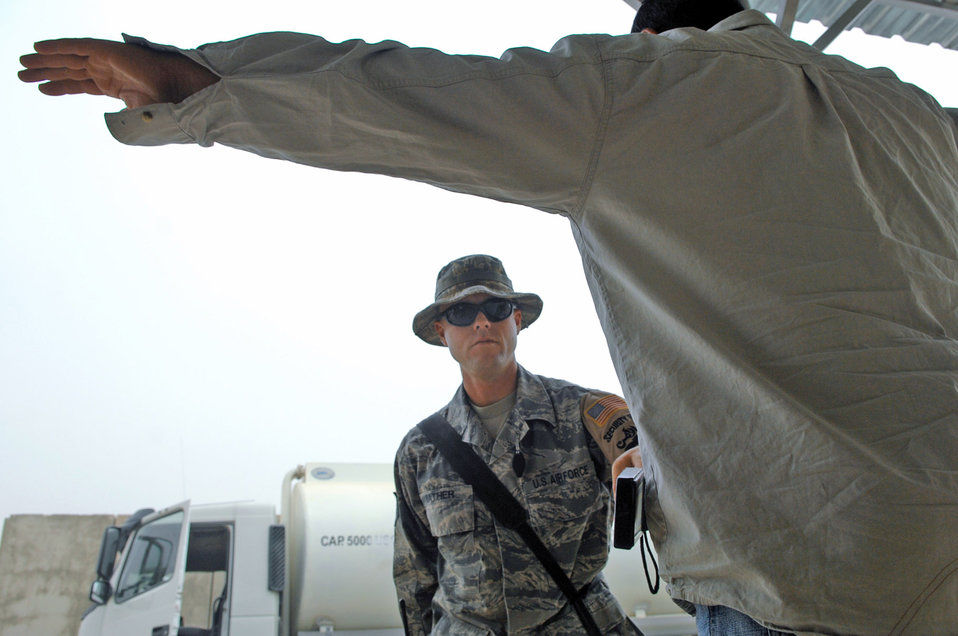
Inspecting and protecting

Staff Sgt. Shawn Sather uses a wand to determine if a vehicle driver is carrying concealed items May 17 at Balad Air Base, Iraq. Preventing unauthorized items from entering the base via vehicles or personnel ensures the safety of those assigned to the base. Sergeant Sather is a 332nd Expeditionary Security Forces Squadron force protection inspector deployed from Luke Air Force Base, Ariz.